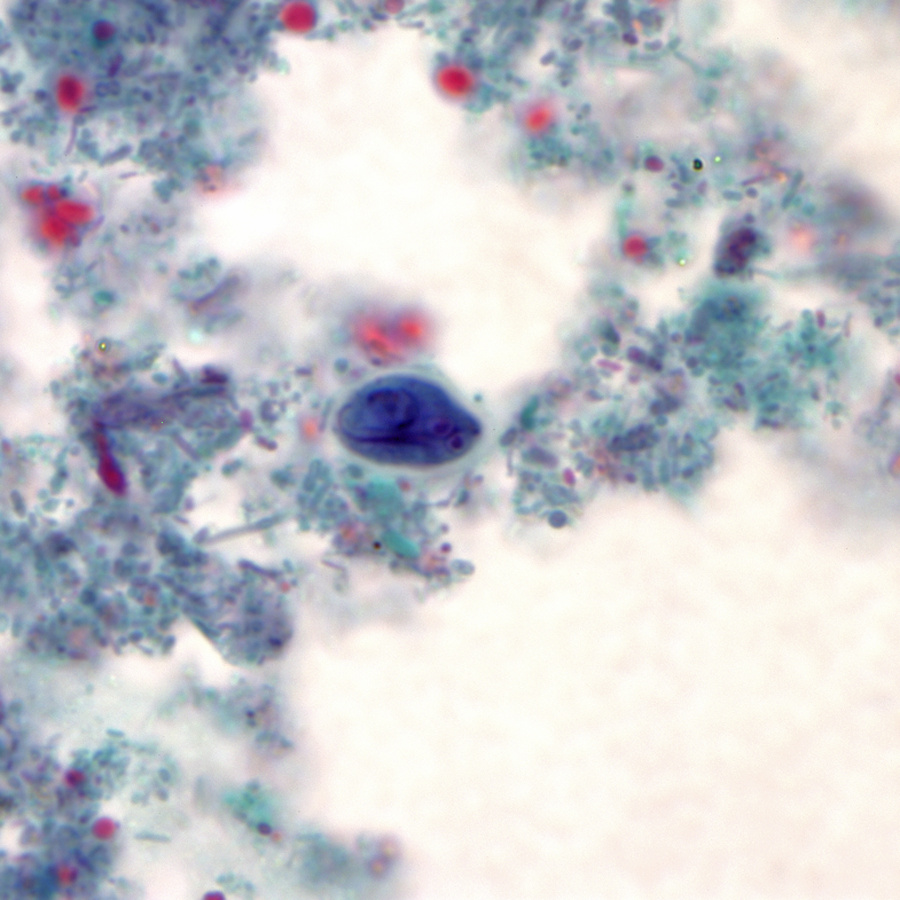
Using a trichrome stain, this photomicrograph revealed the morphologic characteristics of a blue-stained Giardia intestinalis protozoa cyst (center). The Giardia parasite lives in the intestine of infected humans or animals. Millions of cystic protozoa can be released in a bowel movement from an infected human or animal. Giardia is found in soil, food, water, or surfaces that have been contaminated with the feces from infected humans or animals. You can become infected after accidentally swallowing the parasite; you cannot become infected through contact with blood.